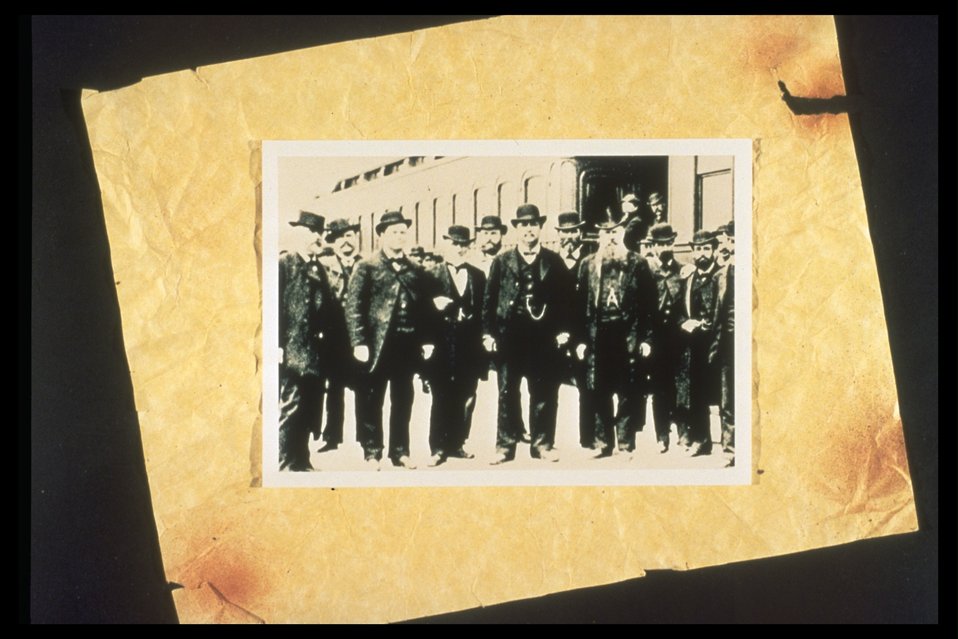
Black and white photo of a group of O & C business men.